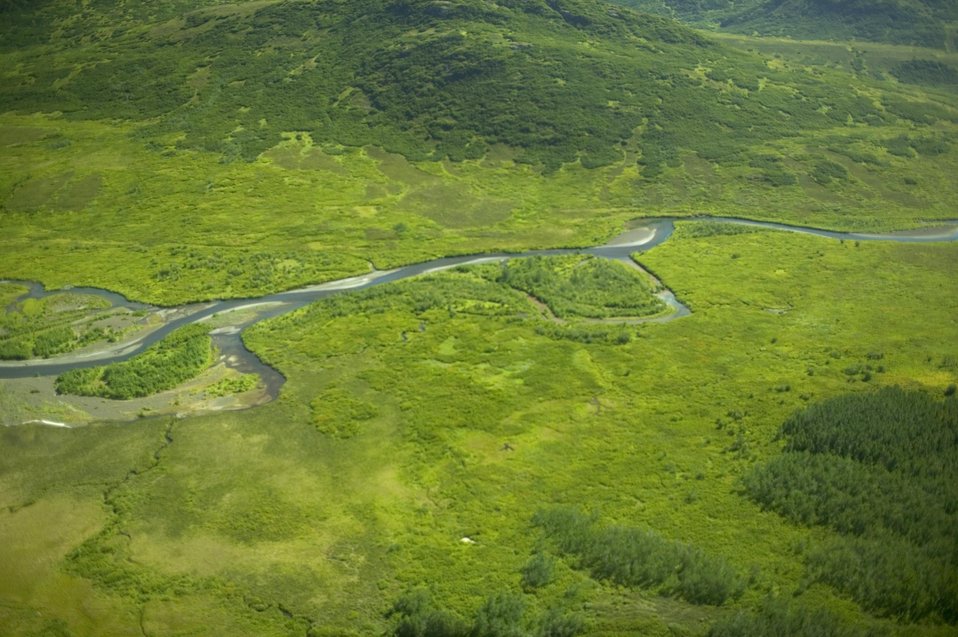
Togiak Nation Wildlife Refuge